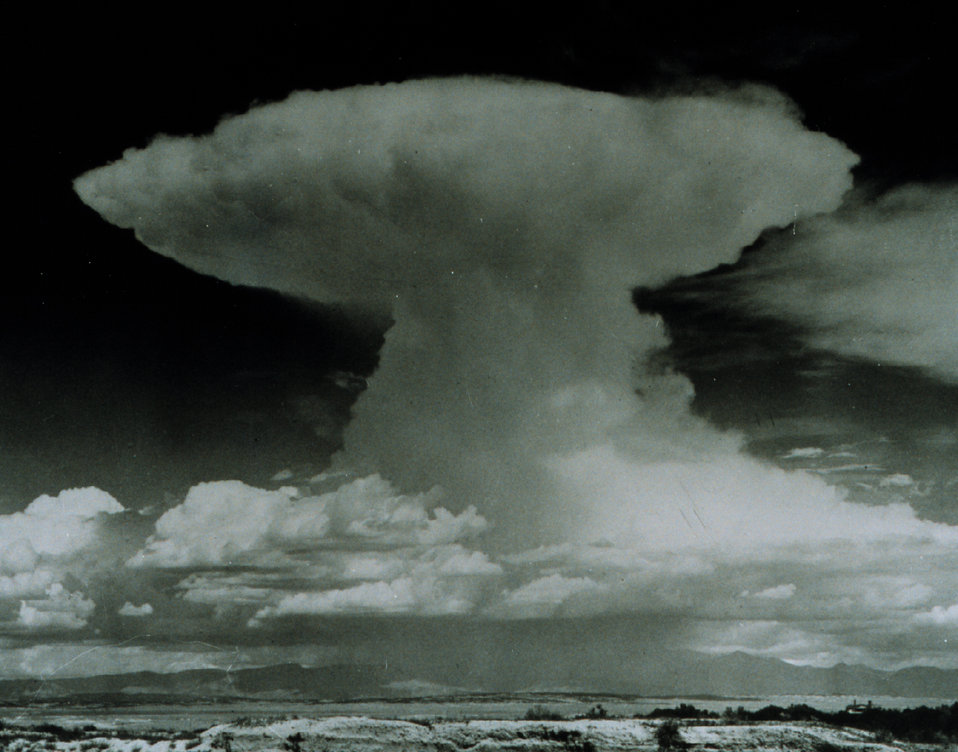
Towering thunderhead with anvil top